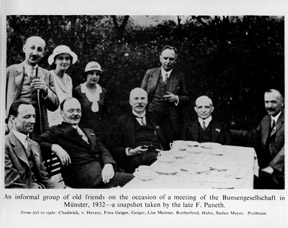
Meeting of the Bunsengesell schaft in Munster, 1932..